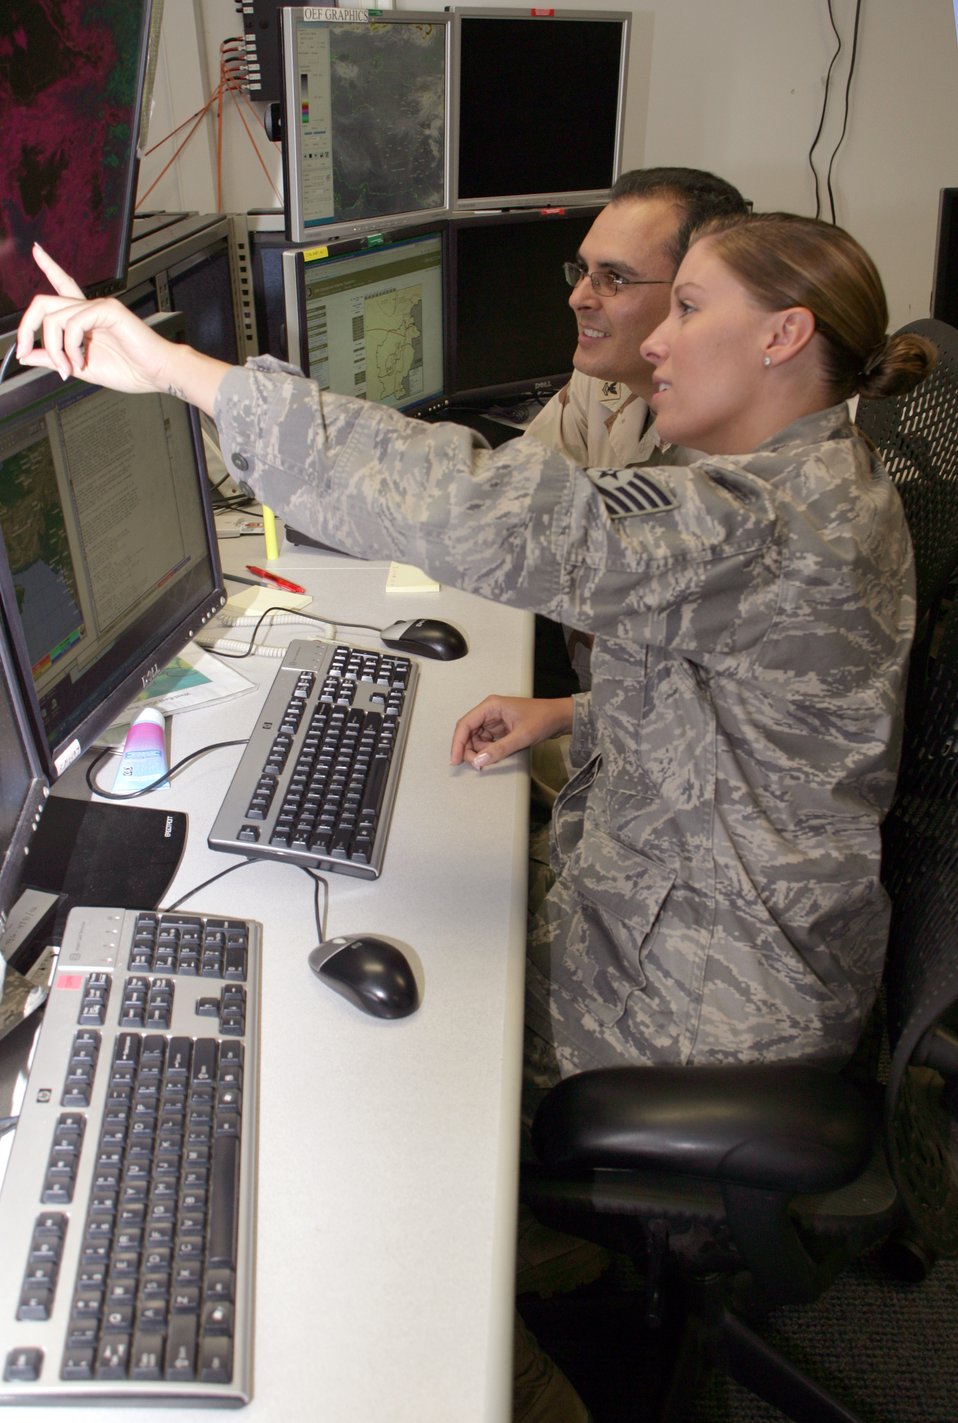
True team effort behind weather squadron's success

Tech. Sgt. Casey Grim and Navy Petty Officer 2nd Class Jorge Castillo both serve together at the 28th Operational Weather Squadron here as joint operational area forecasters. The combined 28th OWS team provides weather products for all branches of the U.S. military and our coalition partners in the U.S. Central Command's area of responsibility. Sergeant Grim is a reservist with the 5th Operational Weather Flight. Petty Officer Castillo is an aerographer's mate second class from Naval Station Norfolk, Va.